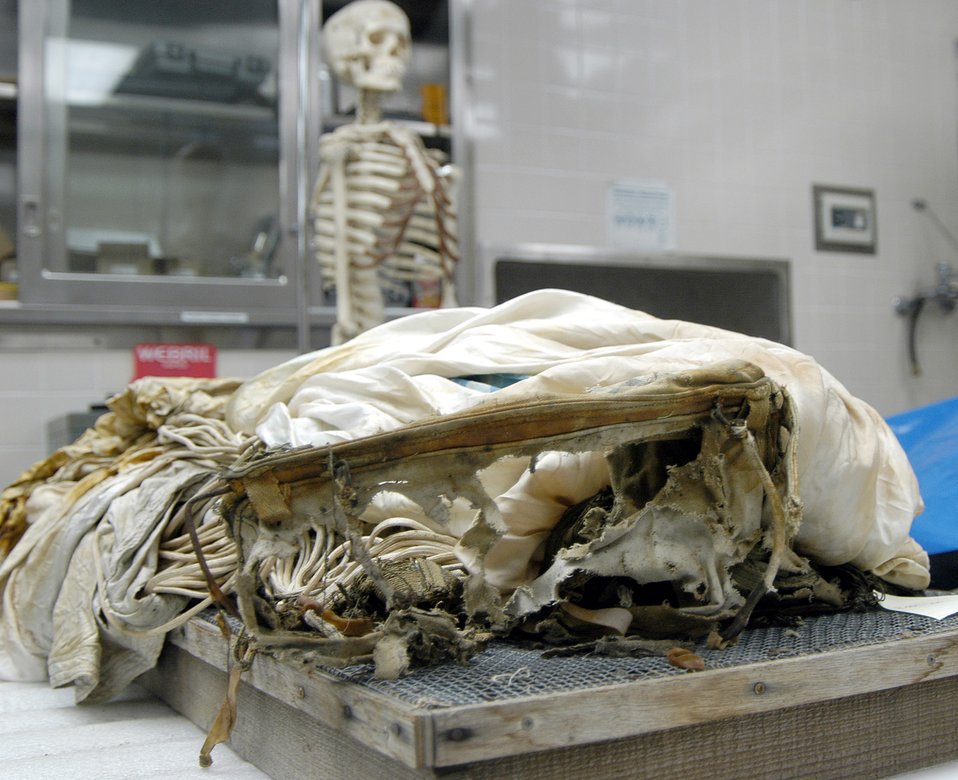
Frozen Airman

HICKAM AIR FORCE BASE, Hawaii (AFPN) -- Joint POW/MIA Accounting Command scientists are working to identify an Airman who was found Oct. 16 on Mount Mendel in Kings Canyon National Park, Calif. The unidentified Airman arrived at JPAC Oct. 24 still wearing a World War II-era parachute, with a comb, various coins and other personal effects in his pockets. Investigators at JPAC searched the records of men lost during World War II and found that between 25 and 30 military planes crashed on training missions in California during these years. They have narrowed the list of possible Airmen to four who disappeared during a training mission on Nov. 18, 1942.